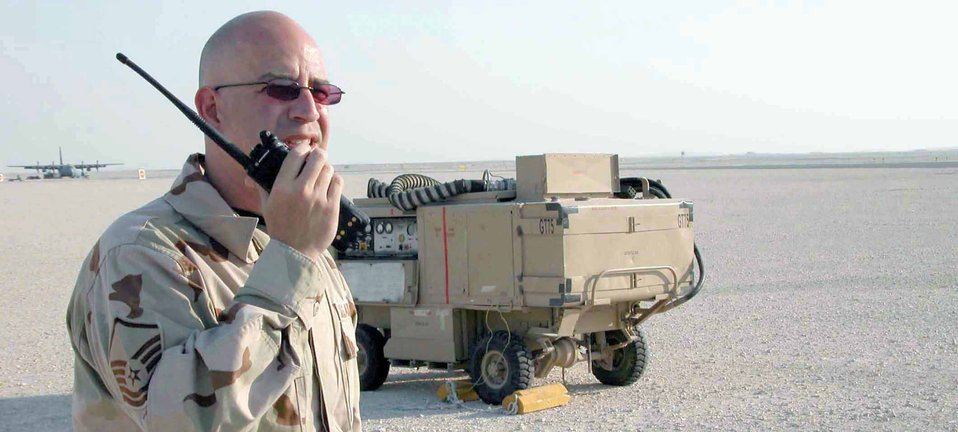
Airfield team stays busy at deployed location

SOUTHWEST ASIA -- Master Sgt. Carlos Marrero calls the tower to close a taxiway so maintenance crews can remove aerospace ground equipment. Sergeant Marrero is the airfield manager at a forward-deployed location. His job requires him to inspect the airfield daily. He is deployed from MacDill Air Force Base, Fla.